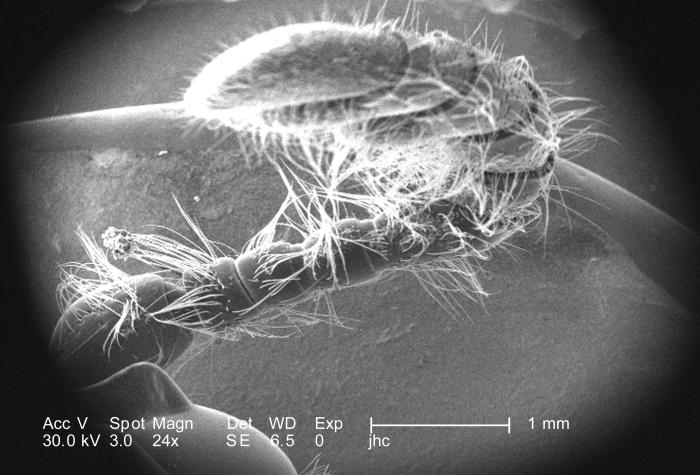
Under a very low magnification of 24X, this scanning electron micrograph (SEM) depicted some of the exoskeletal morphologic characteristics displayed on the head region of an unidentified beetle found deceased in the suburbs of Decatur, Georgia. In this particular view, the insect's left antenna can be seen emanating from the lateral aspect of its head, and looking carefully one can see the proximal 'scape', a single 'pedicle', and the distal, multisegmented 'flagellum'.The scape attaches the sensory organ to the head region, and the pedicle joins the distal, jointed, flagellum to the scape. In many species of beetles, depending upon its morphology, the flagellum is further subdivided into a club, composed of the fused apical 'flagellomeres', and the 'funicle', or 'funniculus', composed of the flagellomeres between the club and the scape.